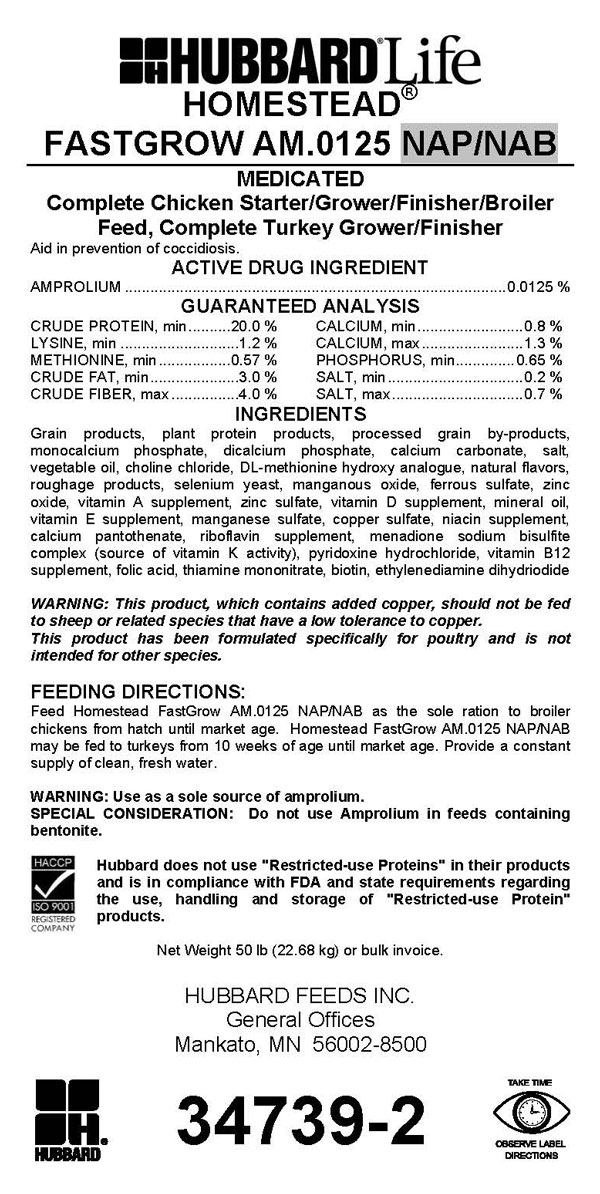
RECALLED – Poultry feed

September 4, 2013 – Hubbard Feeds Inc. Announces an Expanded Voluntary Recall of Hubbard Life Homestead FastGrow Poultry Feed in Indiana, Michigan and Illinois Due to Elevated Calcium.